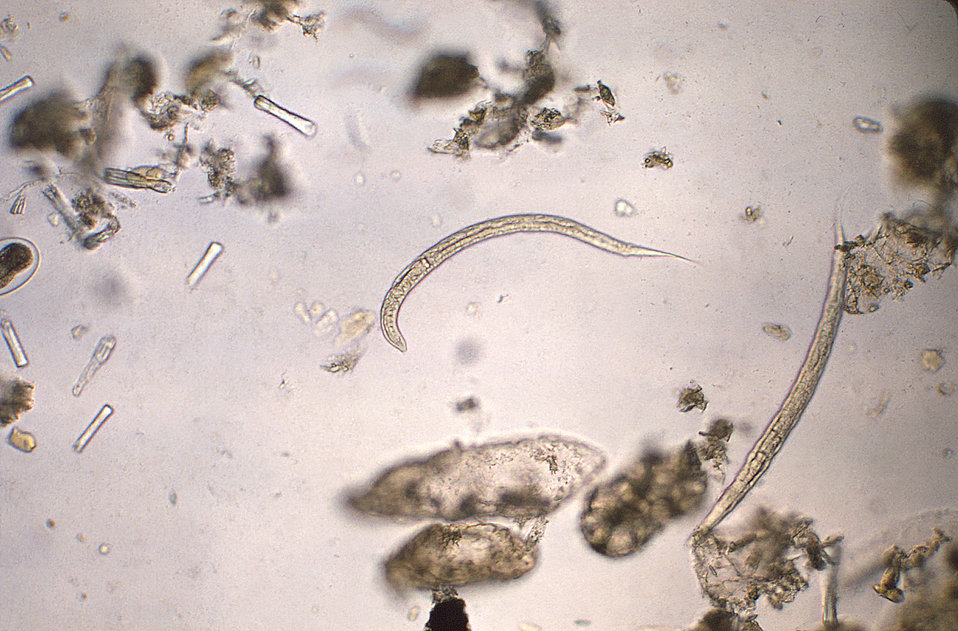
Under a magnification of 128X, this photomicrograph revealed some of the morphologic ultrastructure of a hookworm rhabditiform larva. Rhabditiform (L1) larvae that hatch from eggs are 250-300�m long, and approximately 15-20�m wide. They have a long buccal canal, and an inconspicuous genital primordium. Rhabditiform larvae are usually not found in stool, but may be found there is a delay in processing the stool specimen. If larvae are seen in stool, they must be differentiated from the L1 larvae of Stronyloides stercoralis.